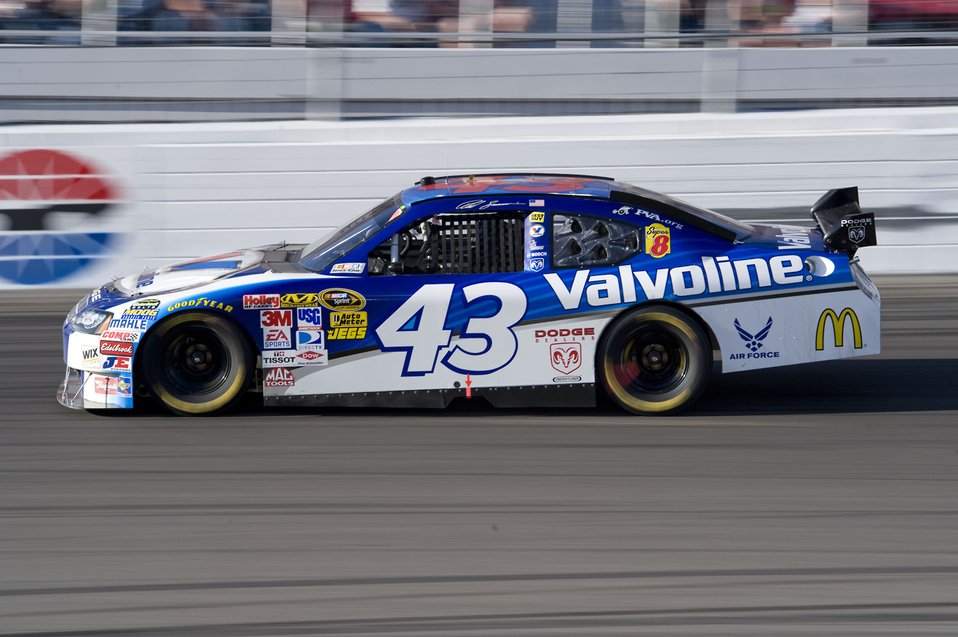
Air Force teams with NASCAR to aid recruiting

Reed Sorenson drives the Air Force sponsored No. 43 Dodge through turn 4 during the Shelby 427 race March 1 at the Las Vegas Motor Speedway.